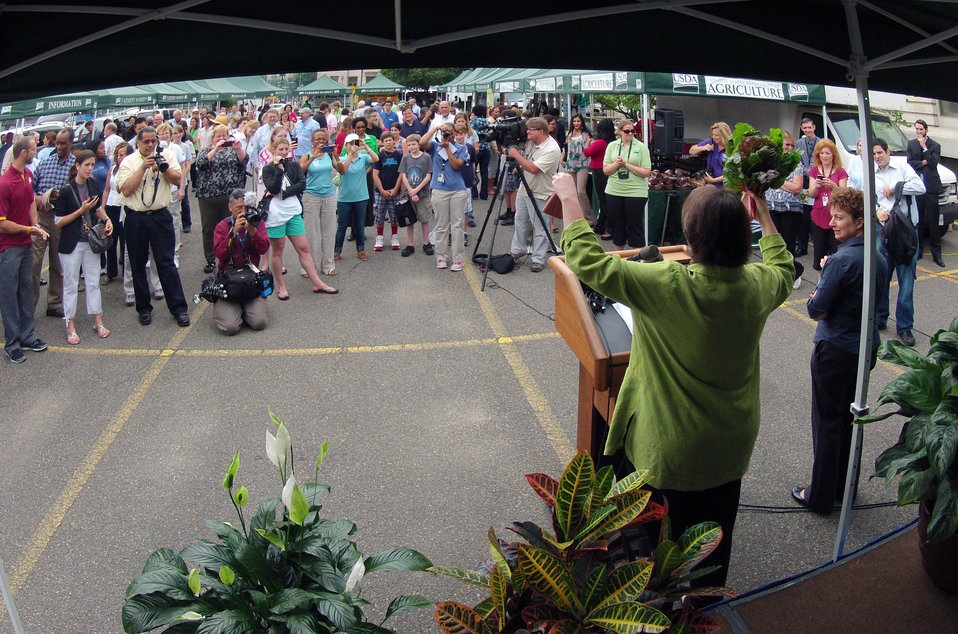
Agriculture Deputy Secretary Kathleen Merrigan rings the bell at the opening of the 17th season of the U.S. Department of Agriculture (USDA) summer farmers market at the USDA Whitten Building east parking lot in Washington, D.C., on Friday, May 31, 2012. This year's theme is Grow, Healthy, Eat Healthy and Be Healthy. USDA and Fuel Up to Play 60, in partnership with the National Dairy Council and the National Football League, invited employees, visitors and local school children to participate in opening day activities. New features for 2012 include an on-site sign language interpreter, a hand washing station, and a USDA-certified organic vendor. Other products sold today are fresh fruits, vegetables, herbs, baked goods, meats, kettle popcorn, local honey, hand-made soap and more.